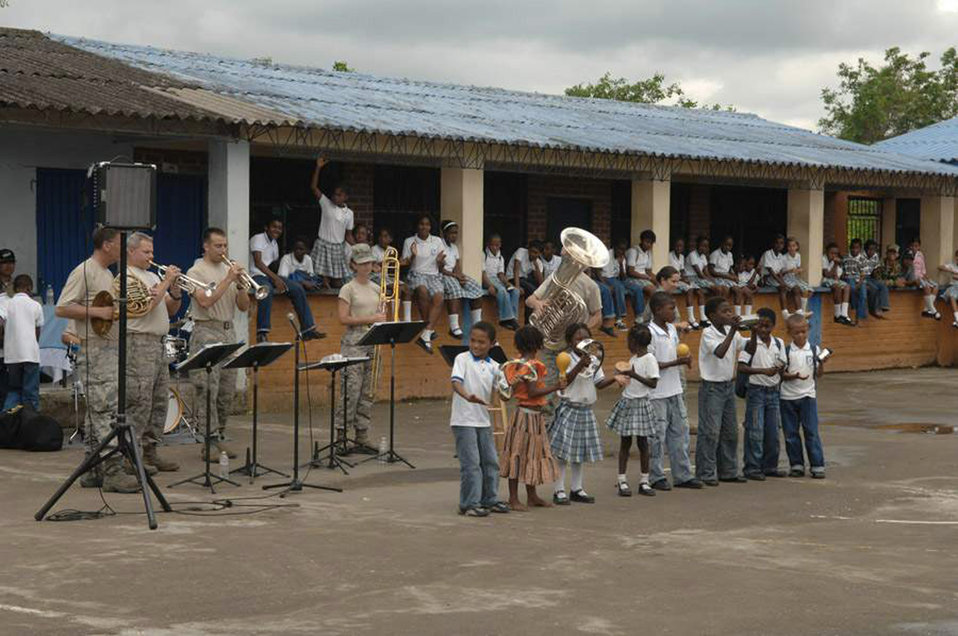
Photo essay: Show and care

Air Force South Band members perform with students from the Cuidadela Mixtra Escuela as part of Continuing Promise 2009 June 10 at Tumaco, Colombia. The humanitarian mission combines U.S. military and interagency personnel, nongovernmental organizations, civil service mariners, academics and partner nations to provide medical, dental, veterinary and engineering services afloat and ashore alongside host nation personnel. The band members are deployed with the Military Sealift Command on the hospital ship USNS Comfort.